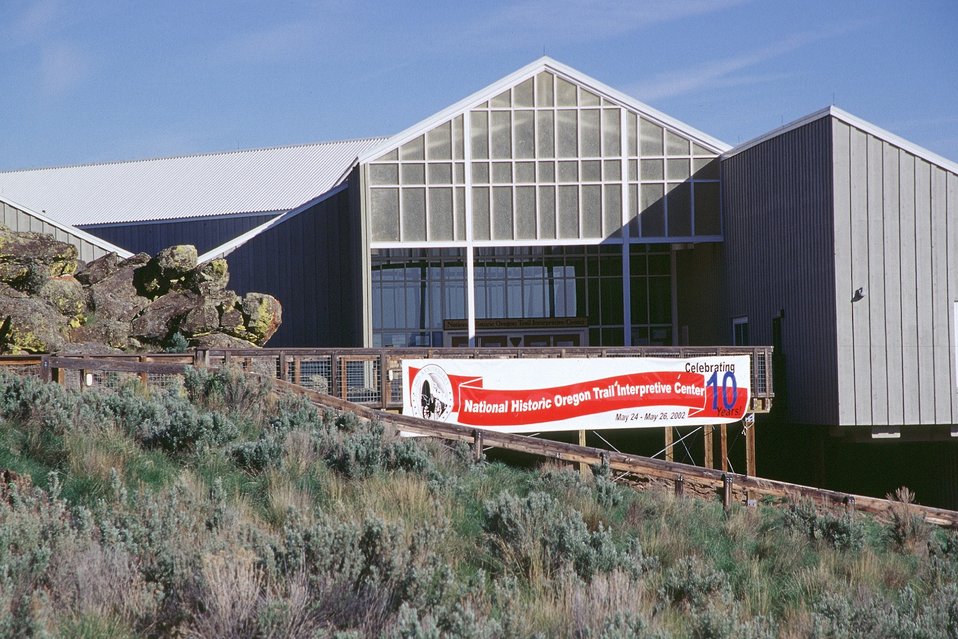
NHOTIC 10th Anniversary. Medium shot of Interpretive Center.